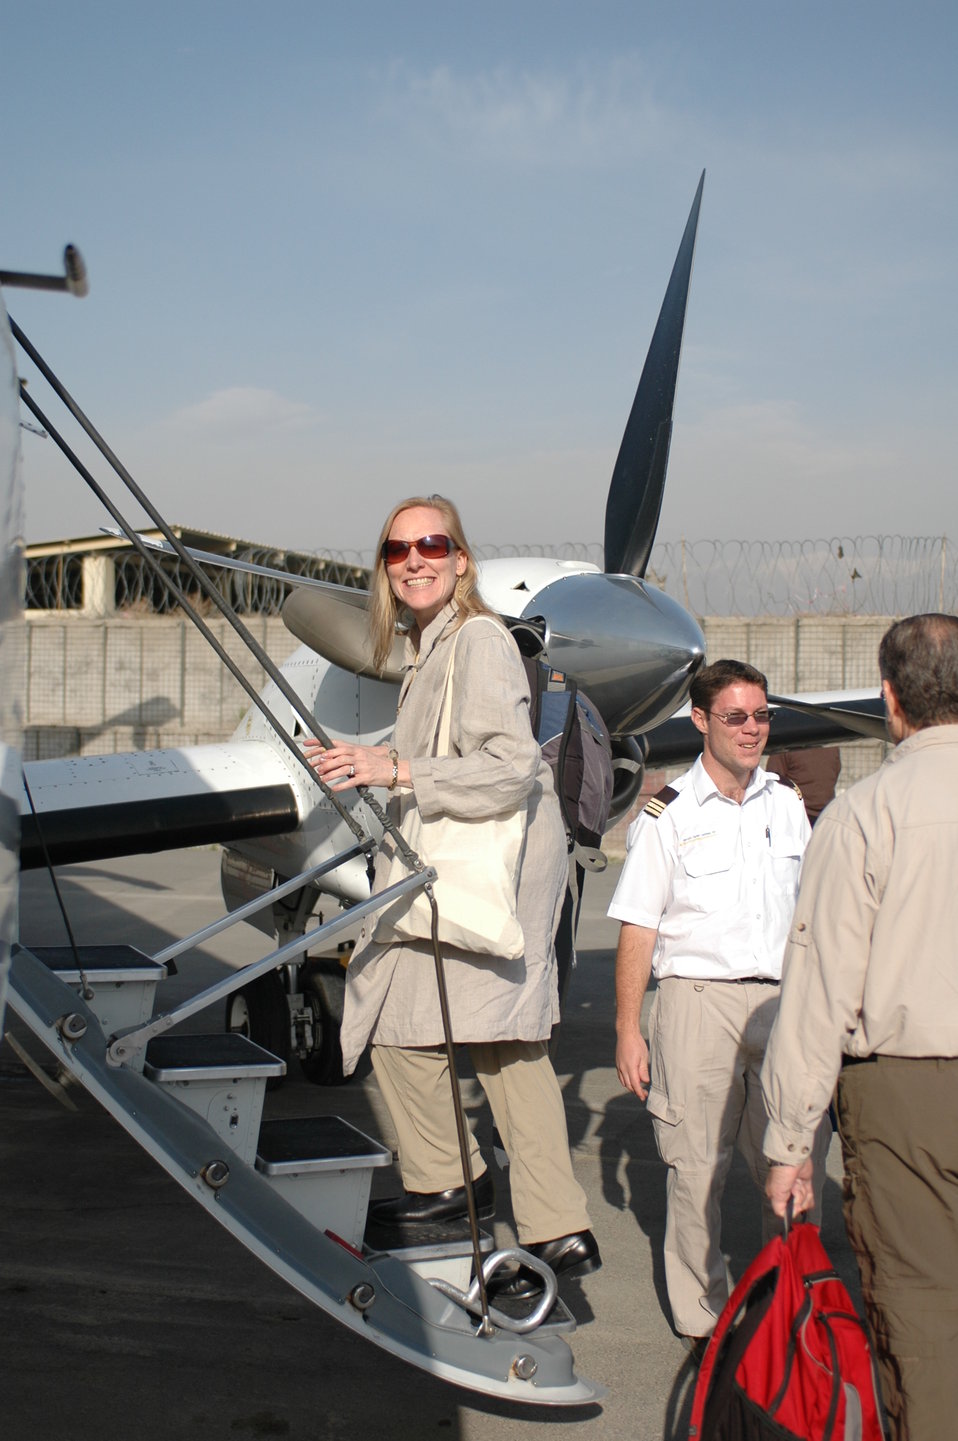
Dr Shah Visits Kandahar April 9, 2010